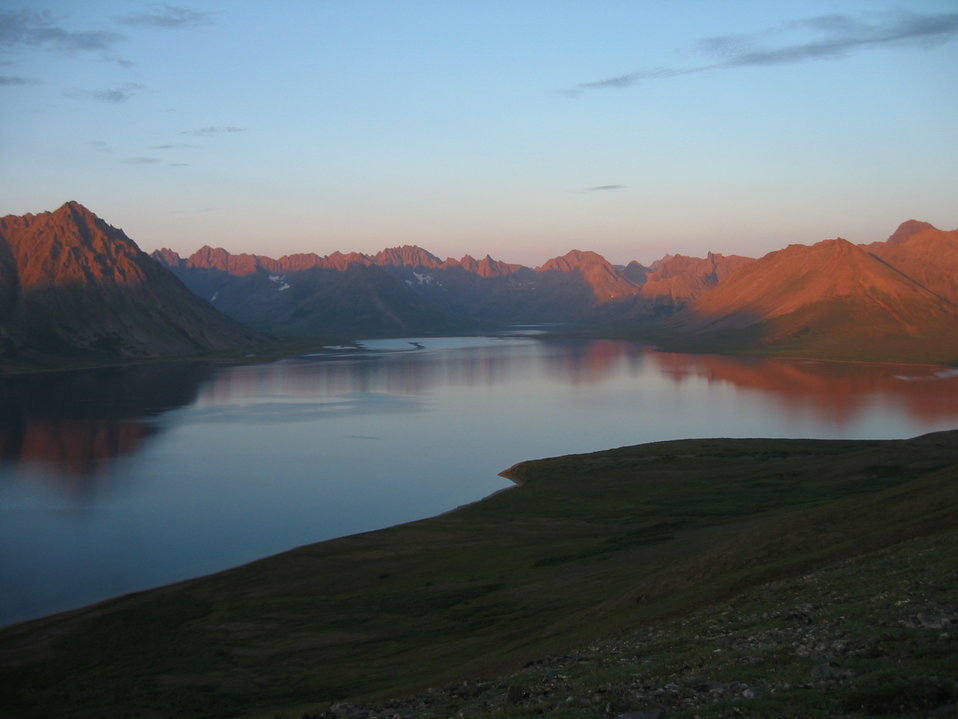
Kwethluk River

USFWS Yukon Delta NWR